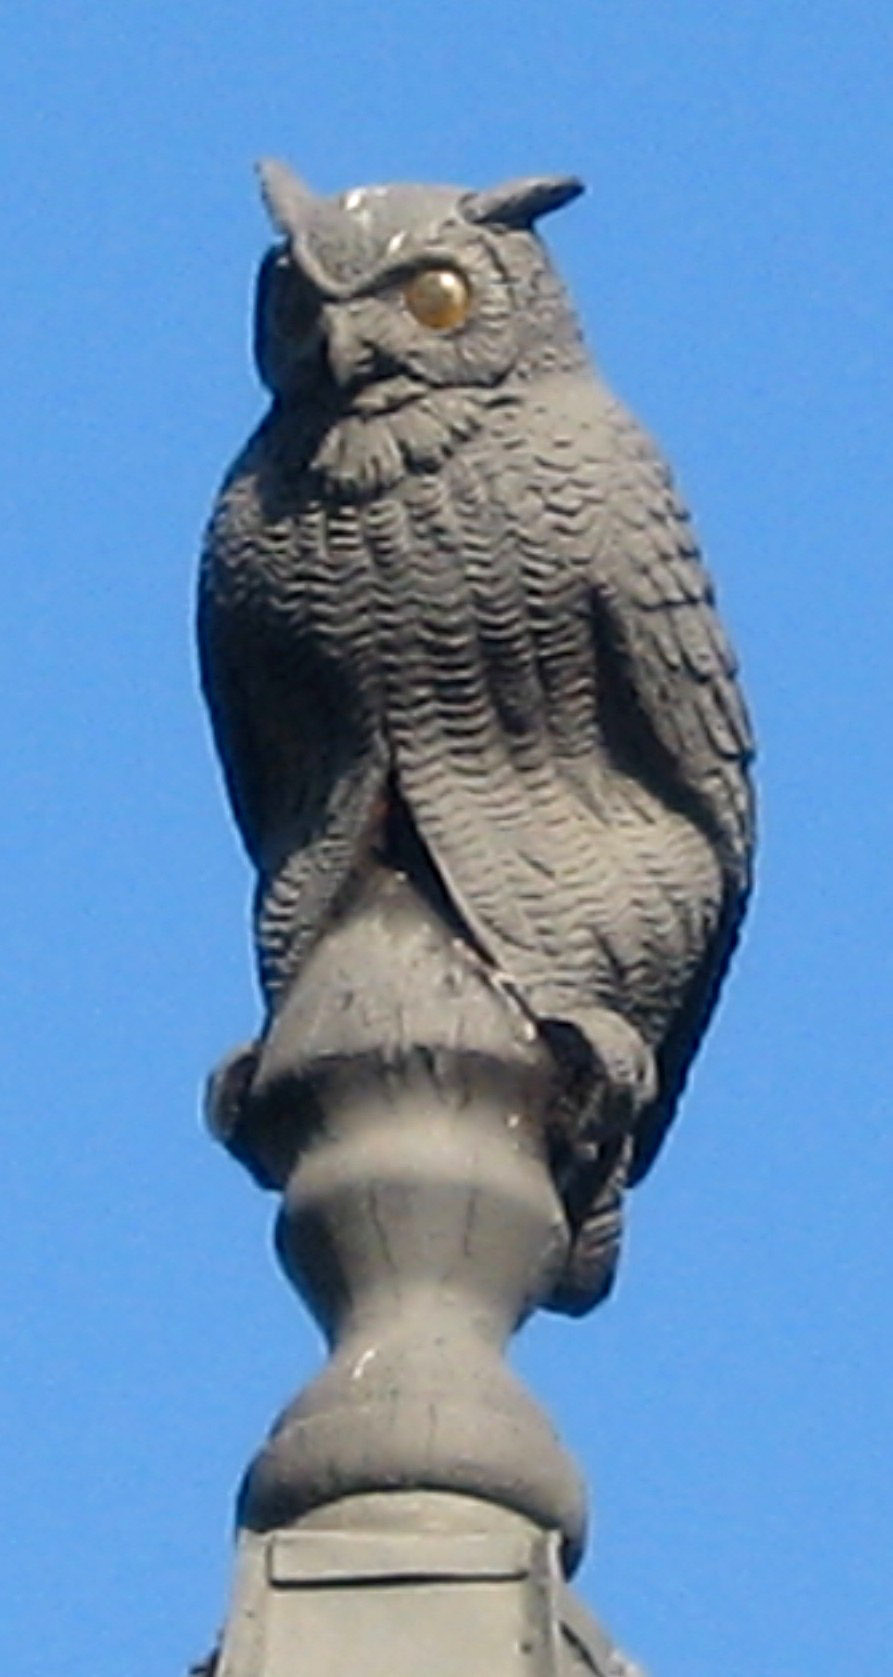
Pentagon Cold War Legend to be Torn Down

The wooden owl atop the current hot dog stand in the Pentagon's courtyard will be placed on the new building that will replace the current structure.